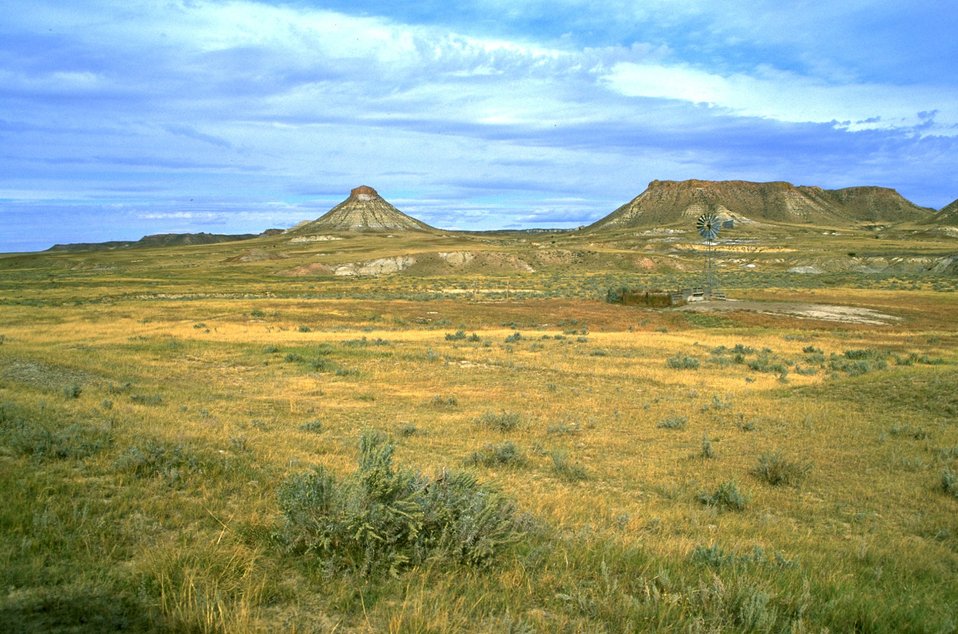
Windmill on the eastern Montana prairie